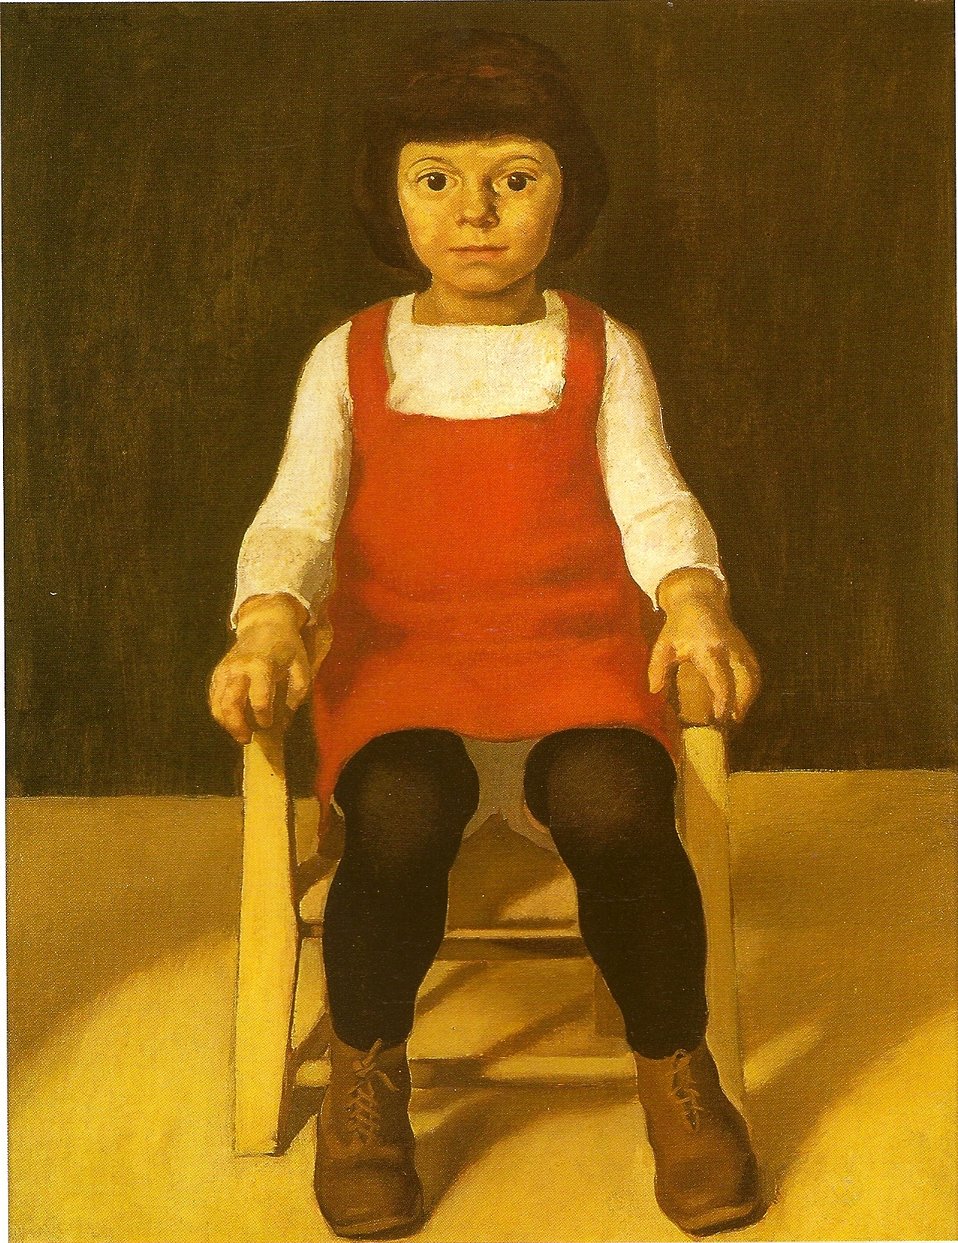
The artists daughter Ila Deutsch: Des Künstlers Tochter Ila - Öl auf Holz 81x63 cm - Stadtgeschichtliche Museen, Nürnberg